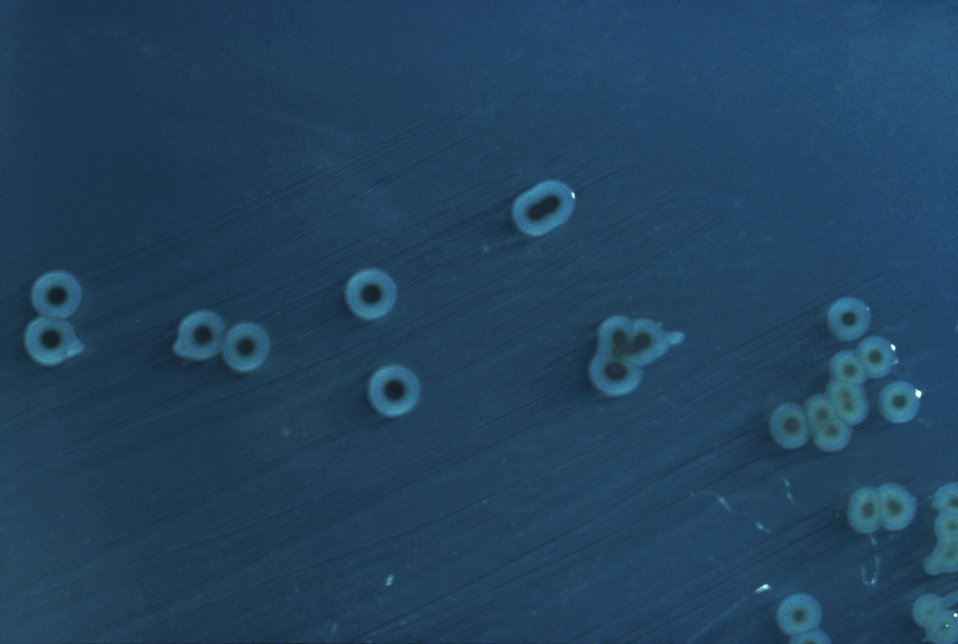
This photograph depicts the colonial growth pattern displayed by Salmonella typhimurium bacteria cultured on a Hektoen enteric (HE) agar medium; S. typhimurium colonies grown on HE agar are blue-green in color, for this organism is a lactose non-fermenter, but it does produce hydrogen sulfide, (H2S), therefore there can be black-colored deposits present.